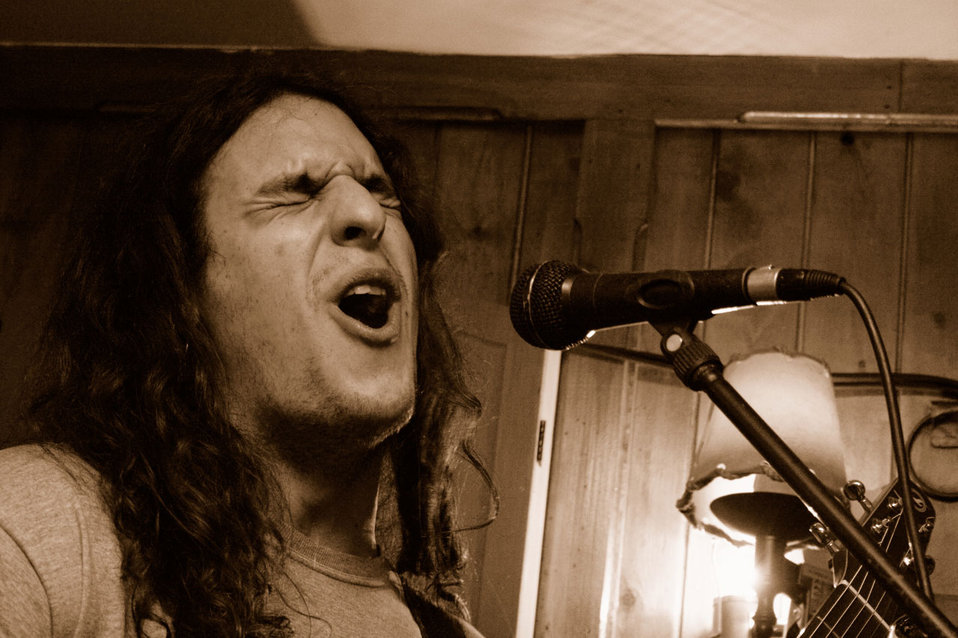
Singer at open mic session in a pub.